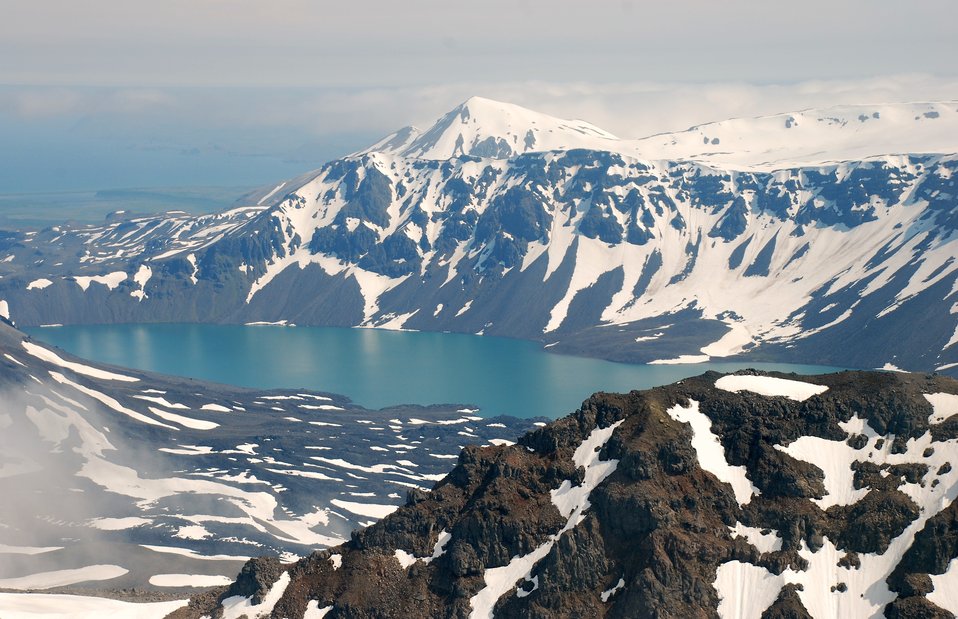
Lake Emmons

Alaska Peninsula National Wildlife Refuge